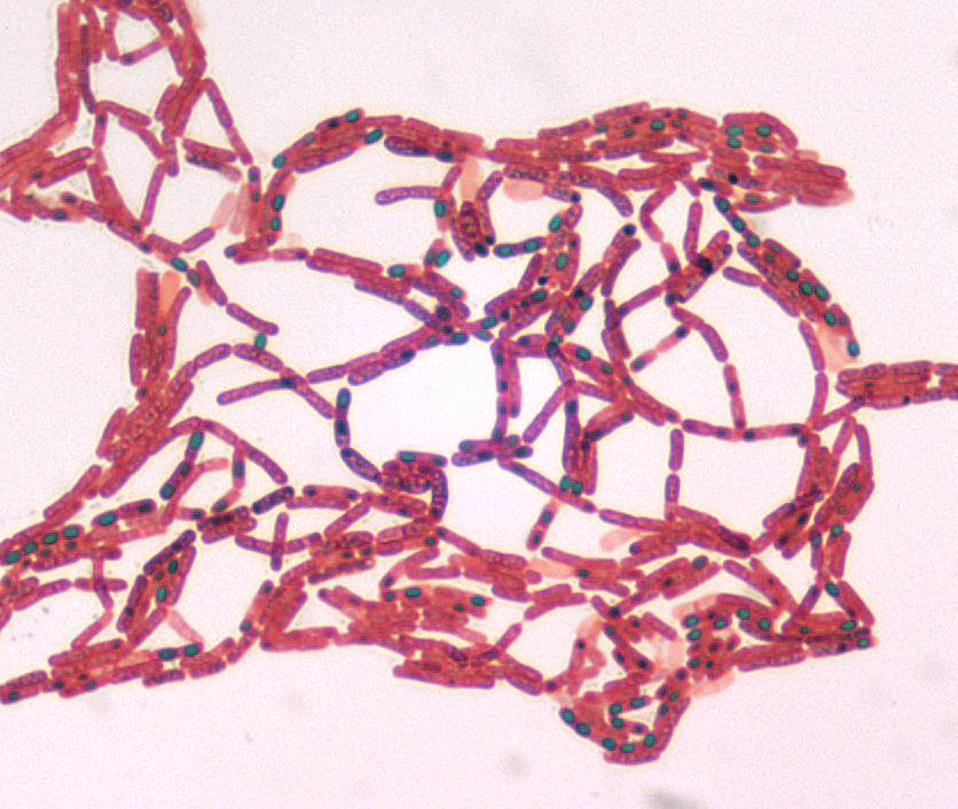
Bacillus species Malachite Green spore stain.